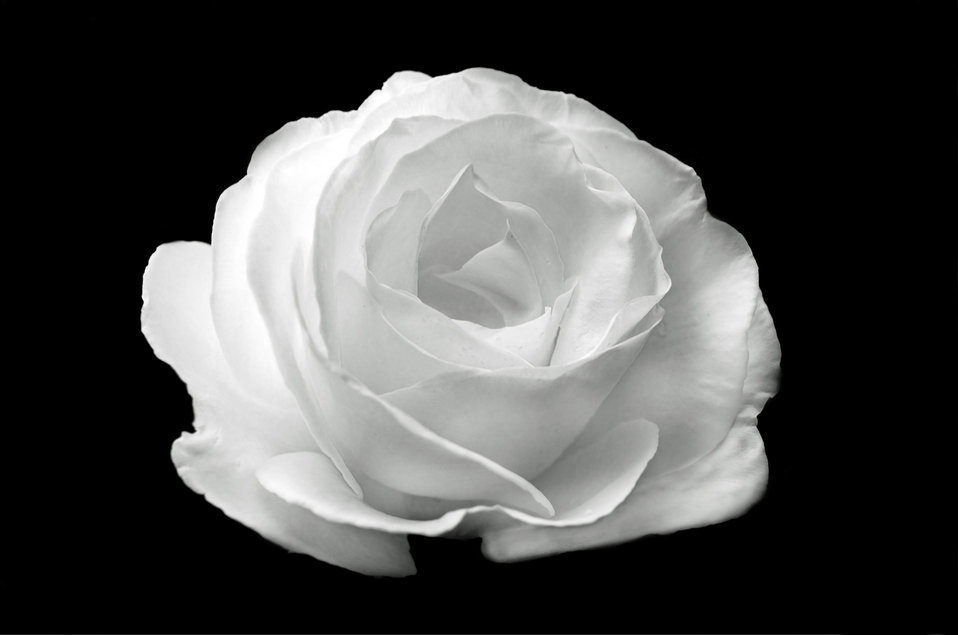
White rose on the black background.